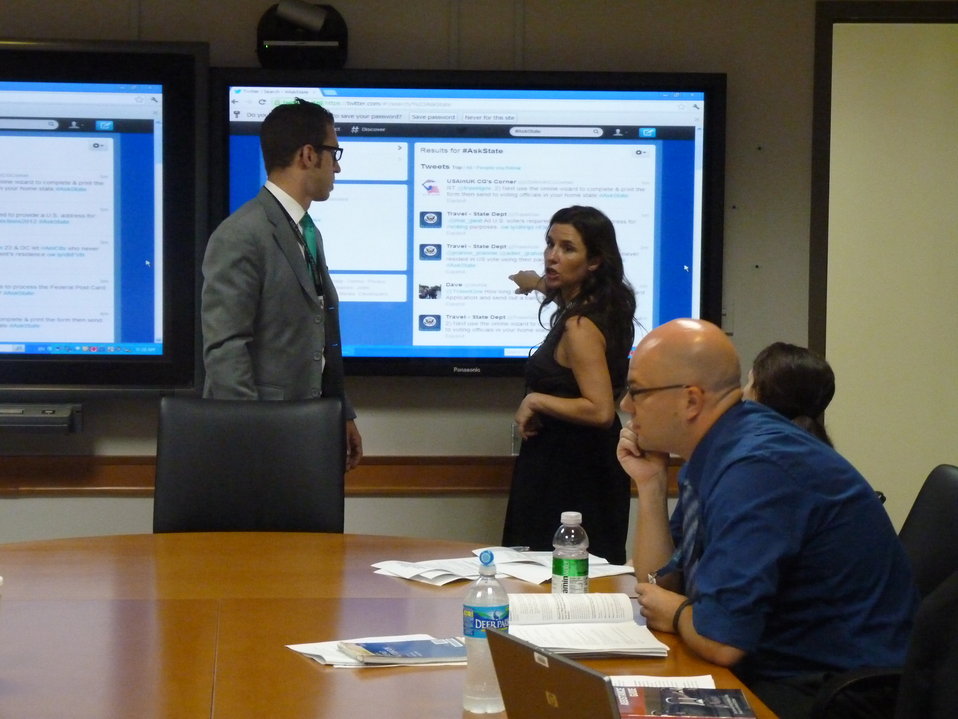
Twitter QandA on Absentee Voting Information for U.S. Citizens Abroad

Corina Dubois of the Bureau of Consular Affairs reads incoming questions during a Twitter Q&A on absentee voting information for U.S. citizens abroad with Deputy Director of American Citizen Services for the U.S. Department of State's Bureau of Consular Affairs Jack Markey on August 28, 2012.